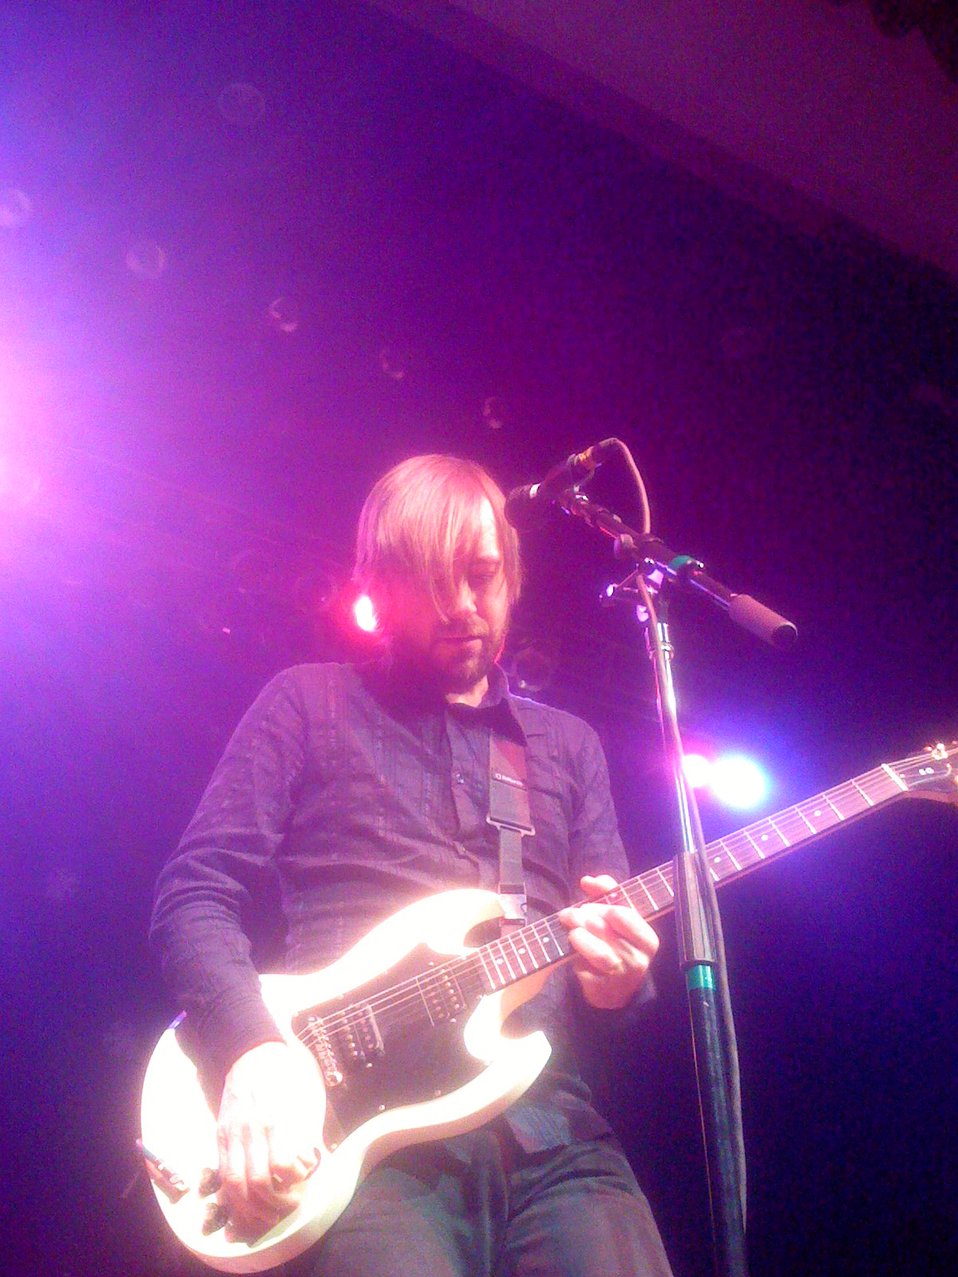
Fred, in Covington Ky. (The Color Fred)